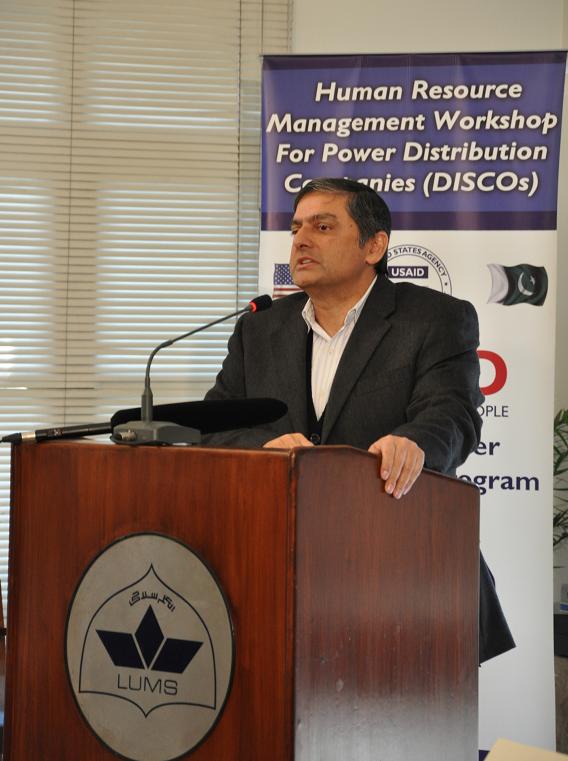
Arif Butt - Dean Business Management Studies LUMS